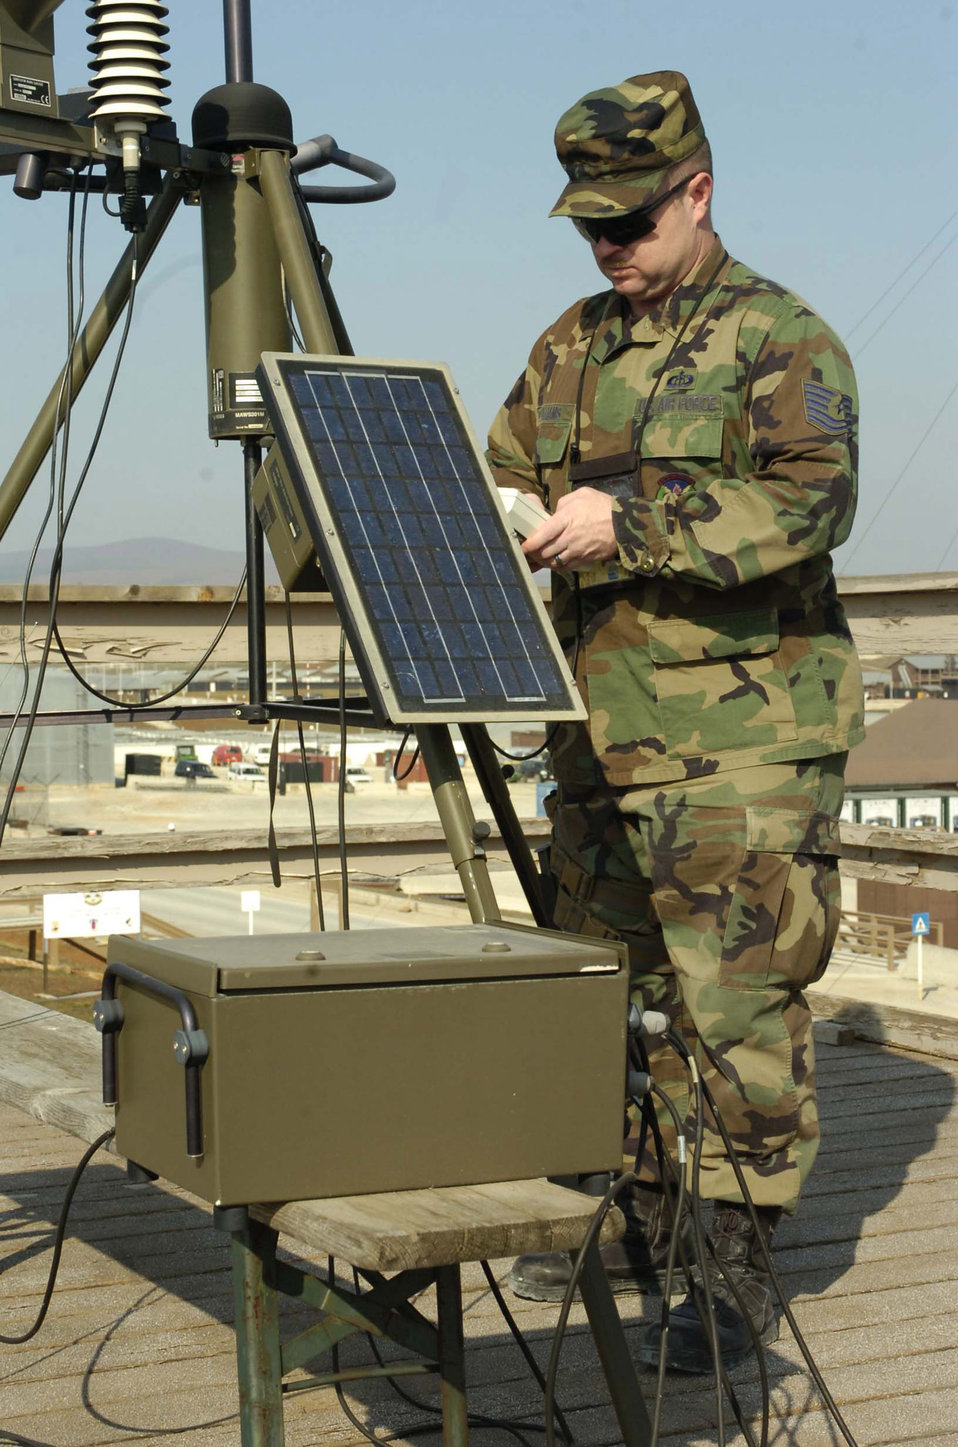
Peacekeeping mission continues for Airmen in Kosovo

Tech. Sgt. Scott Williams works with sensory equipment on top of a weather tower Feb. 29 at Camp Bondsteel, Kosovo. Sergeant Williams, a combat weatherman, and three Air National Guardsmen provide 24/7 weather forecasting to rotary-winged aircrews and 1,400 Soldiers deployed to Camp Bondsteel.